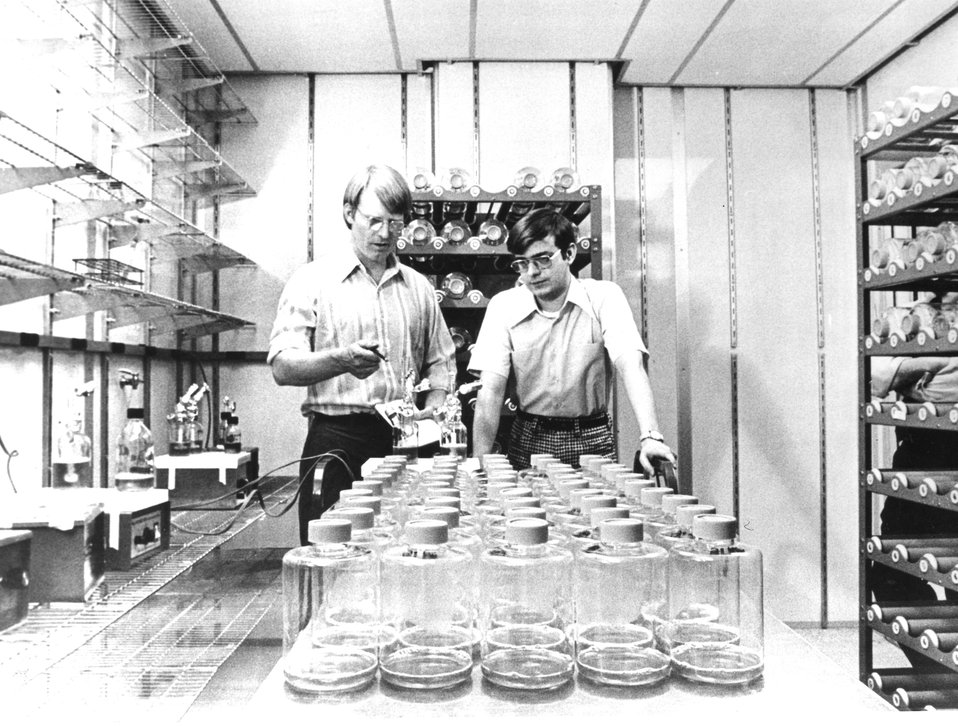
Burning coal and other fossil fuels produces soot, which may damage the human genetic structure. Circa 1977.